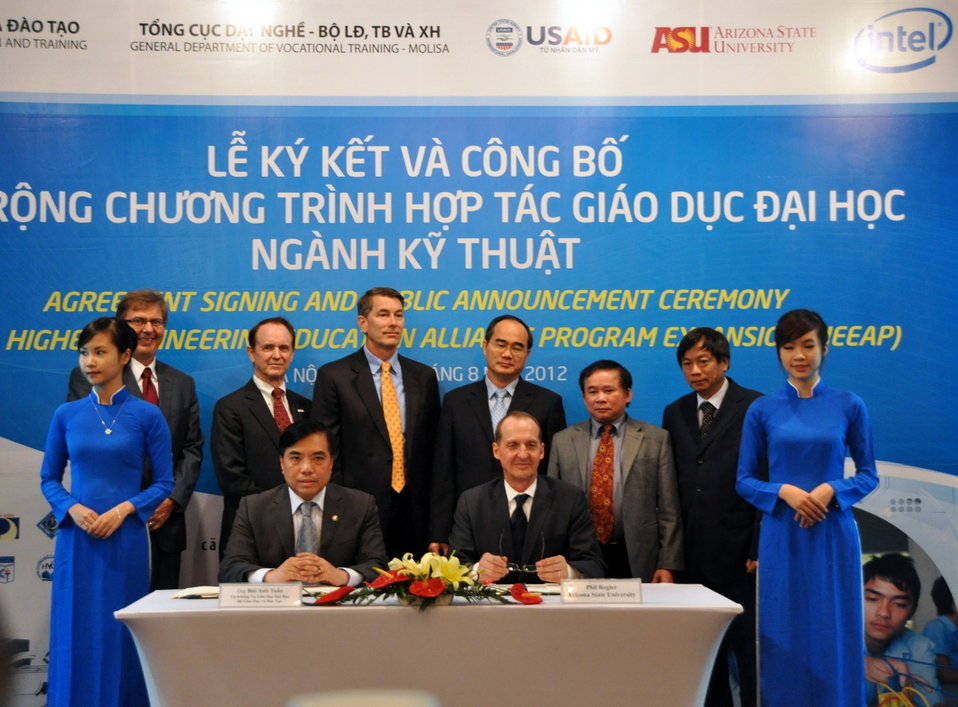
Higher Engineering Education Alliance Program Expansion Launch

Hanoi, August 20, 2012.